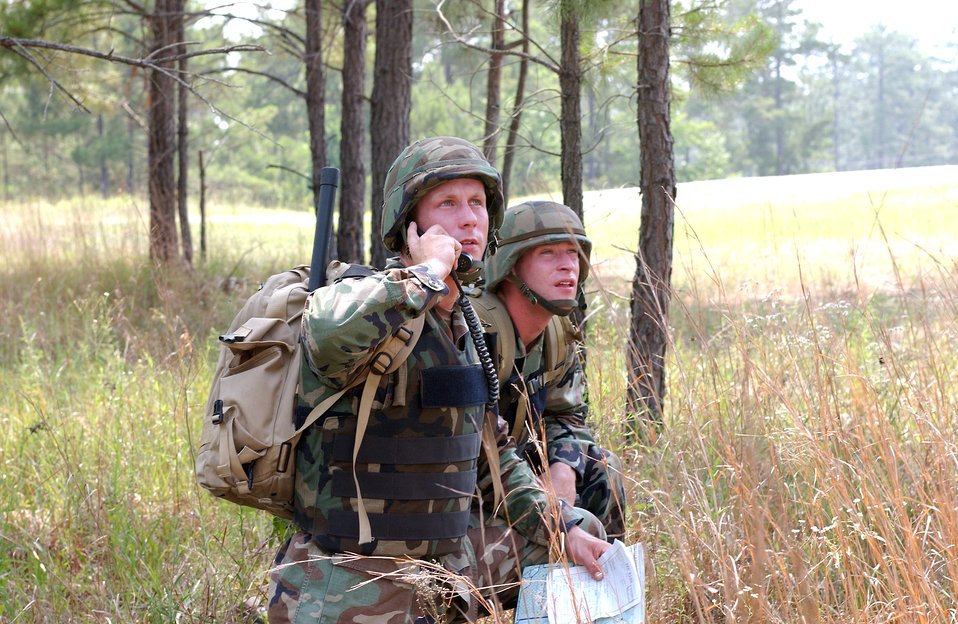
Air Warrior II tests aircrews and controllers

FORT POLK, La. -- Staff Sgt. Dan Kovarik (left) and Senior Airman Joshua Cullins guide an A-10 Thunderbolt II onto a target during a live-fire portion of Air Warrior II here. The joint exercise trains Army units with embedded Air Force Joint terminal attack controllers in a realistic battlespace. Troops face a live enemy force, local role players and a variety of targets for air and ground forces.